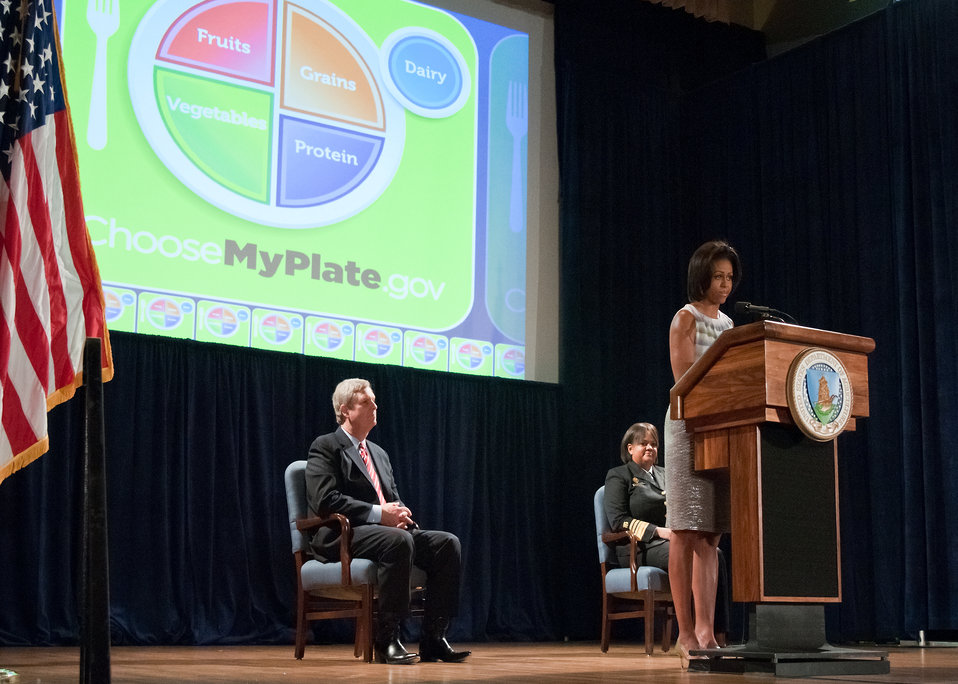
First Lady Michelle Obama speaks about the new food icon that will serve as a reminder to help consumers make healthier food choices at the United States Department of Agriculture, Thursday, June 2, 2011 (seated L to R Agriculture Secretary Tom Vilsack and Surgeon General Regina Benjamin). The White House Child Obesity Task Force called for simple advice to consumers with information to help them make healthy food choices. As a result USDA has introduced the new food icon to replace the MyPyramid image representing the food guide pyramid as the government’s primary food group symbol. The new food icon will be part of a comprehensive nutrition communication initiative that provides consumers with easy-to-understand recommendations, a new website with expanded information and other tools and resources.